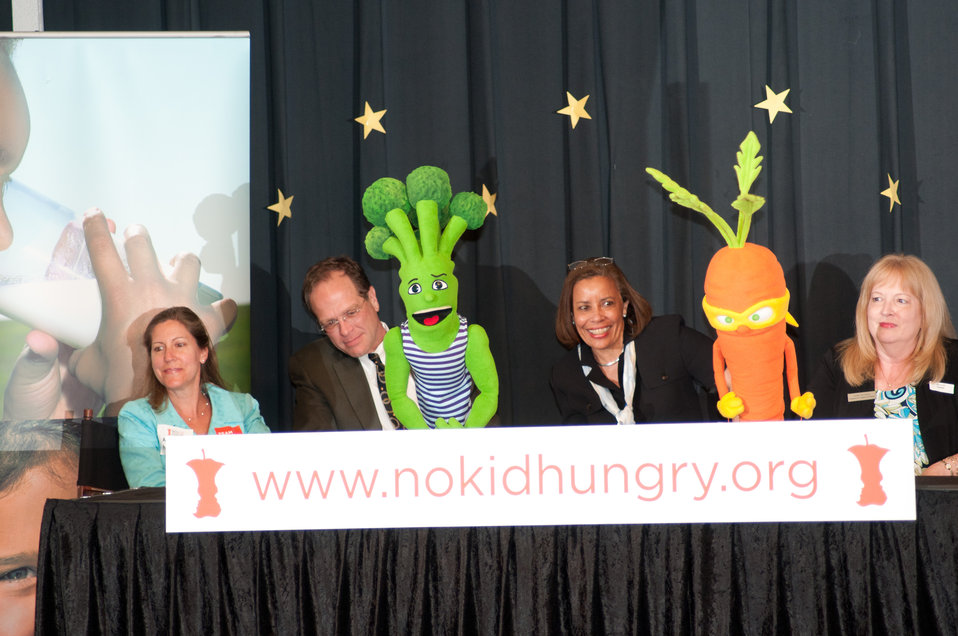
Left to right on stage, School Board Vice Chairperson Abby Raphael, Arlington County School Superintendent Patrick K. Murphy, Federation of Virginia Food Banks Executive Director Leslie Van Horn, Barcroft Elementary School Principal Miriam Hughey-Guy, as two of the Super Sprowtz super-powerful vegetable super hero puppet characters, Brian Broccoli and Colby Carrot, encourage the students, parents and teachers of Barcroft Elementary School to get up and dance, during the launch of the Virginia No Kid Hungry Campaign at the Arlington, VA, school on Tuesday, June 7, 2011.